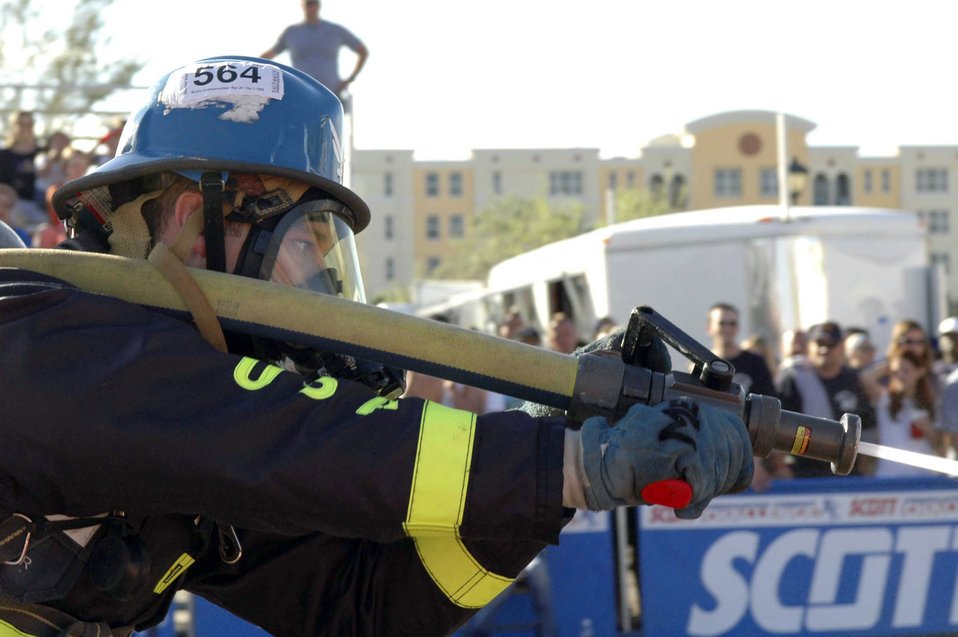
World-class firefighters

DEERFIELD BEACH, Fla. (AFPN) -- Staff Sgt. Harry Myers aims a fire hose at a target during an event at the World Firefighter Combat Challenge here. Sergeant Myers is a firefighter with the 60th Civil Engineer Squadron at Travis Air Force Base, Calif.